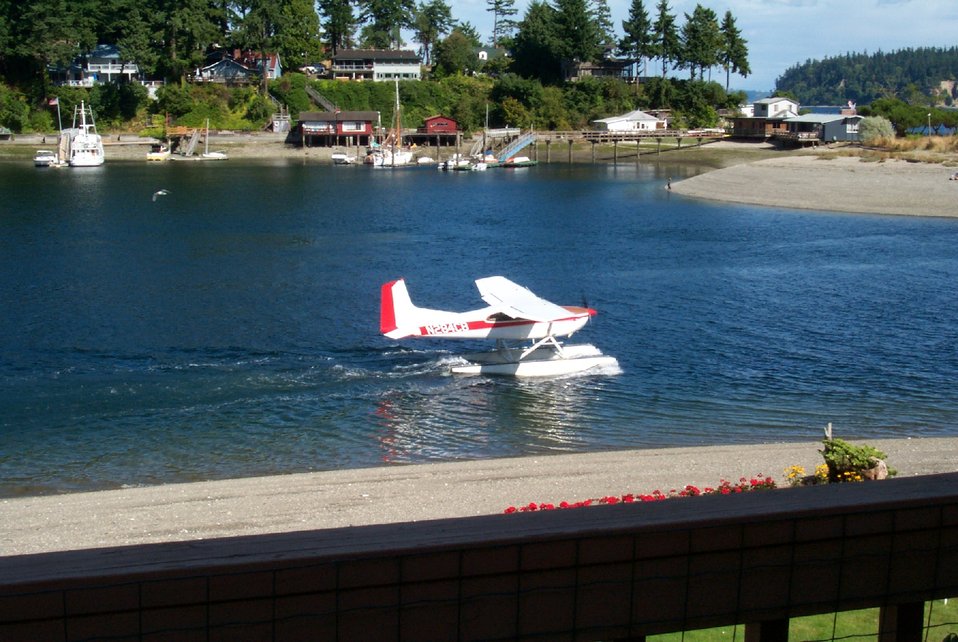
Seaplane departing Gig Harbor.